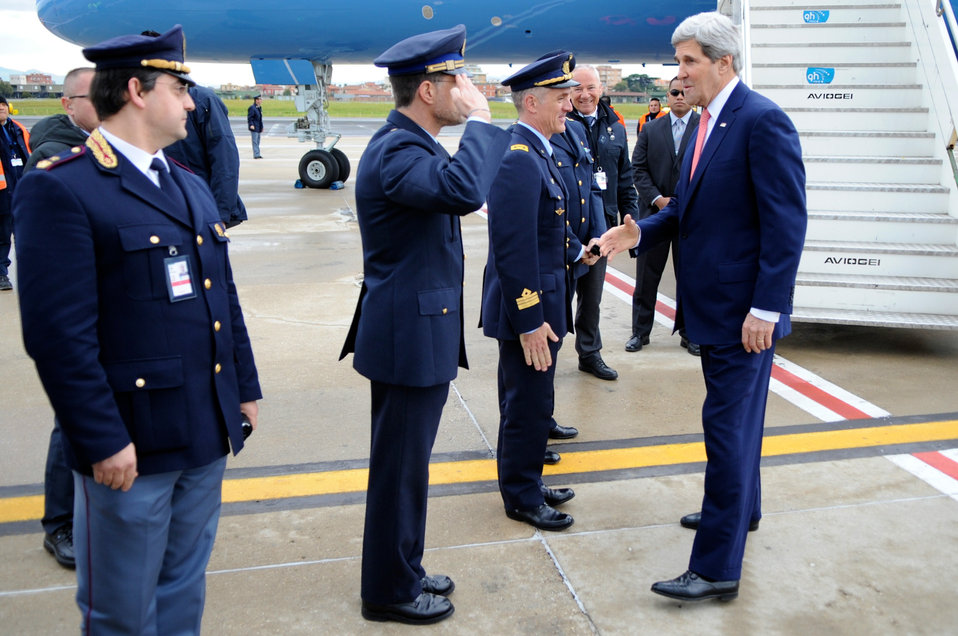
Military Officers Welcome Secretary Kerry Back to Rome

Members of the Italian military salute and welcome U.S. Secretary of State John Kerry as he returned to Rome from Amman, Jordan, on March 27, 2014, to rejoin President Obama on his visit to Italy.